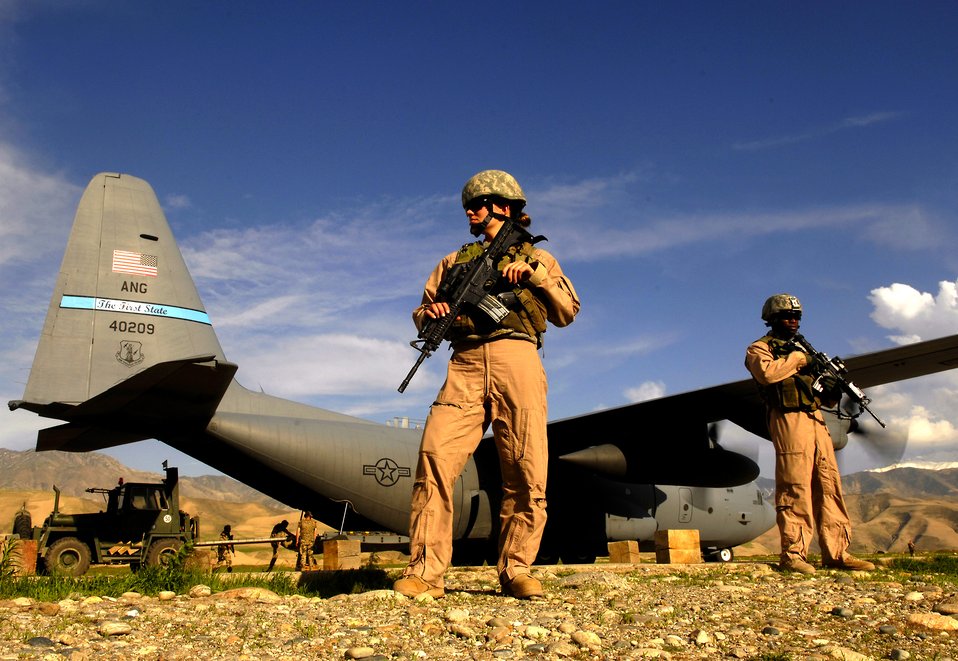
Don't cross this line

Airman 1st Class Kelliea Guthrie (left) and Senior Airman Greg Ellis provide security April 23 for a C-130 Hercules aircraft during a cargo mission at Feyzabab Airfield in Afghanistan. Both Airmen are part of the fly-away security forces team assigned to the 455th Expeditionary Security Forces.